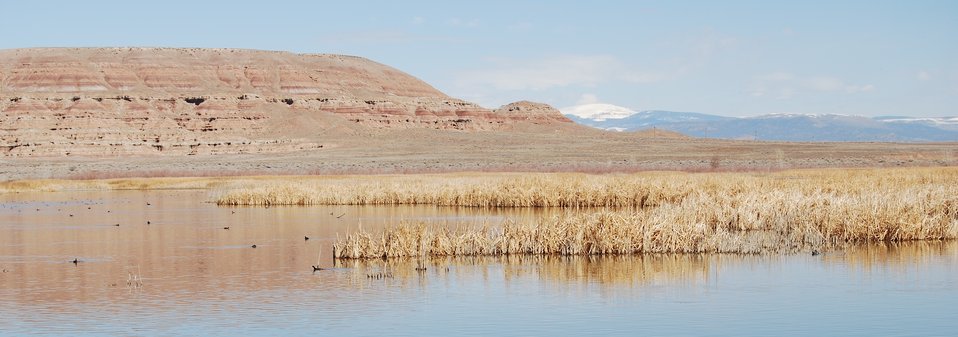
Ouray National Wildlife Refuge

Scenic view of Ouray National Wildlife Refuge in Utah.